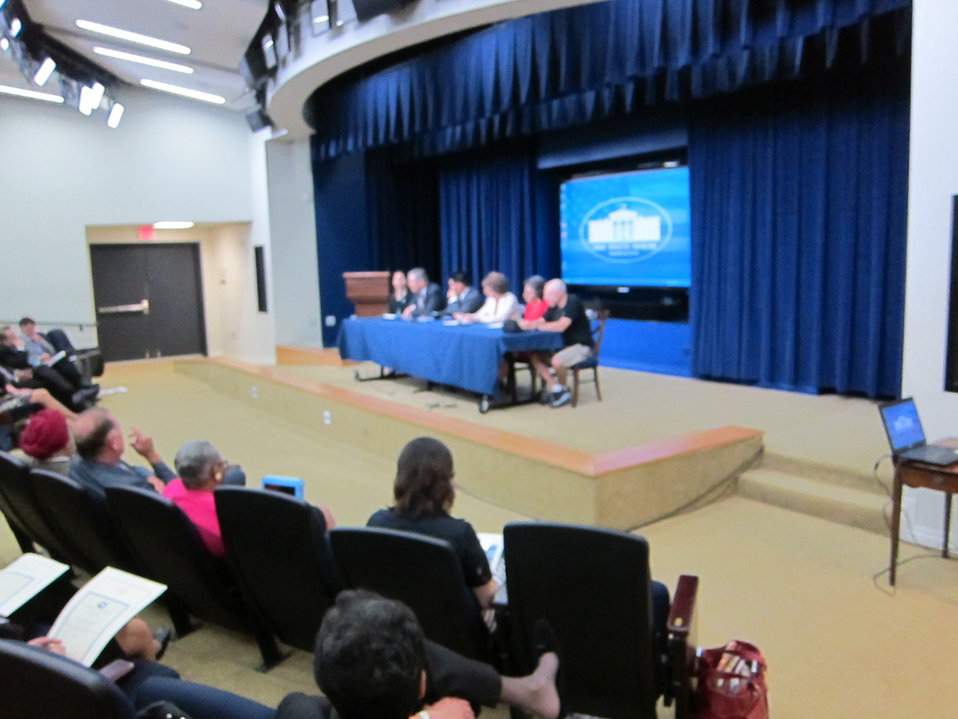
WH 2012 World Hepatitis Day Event